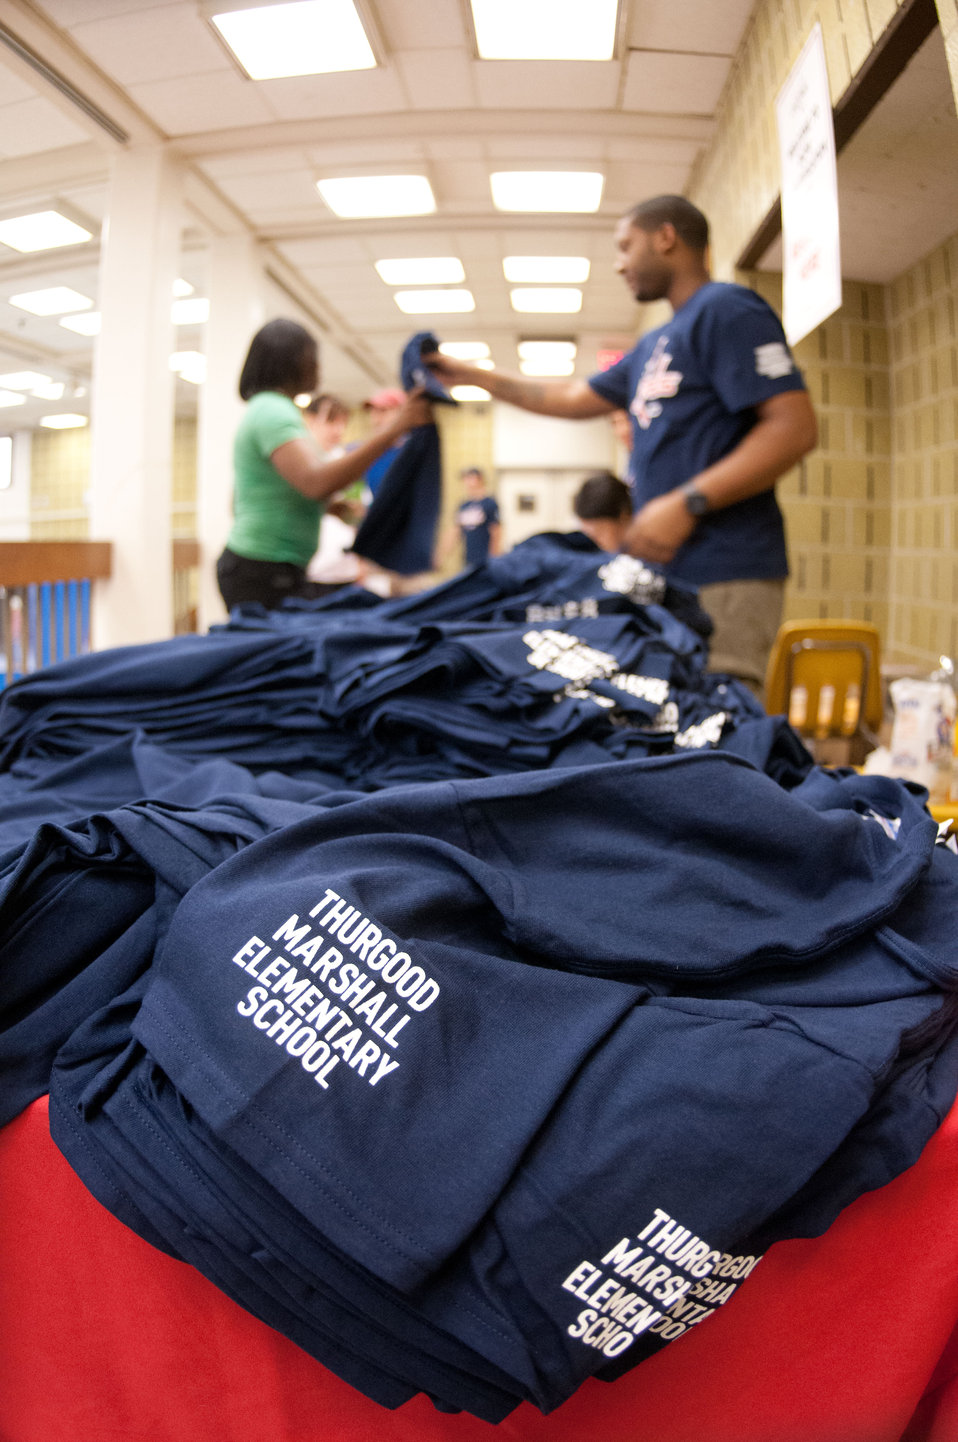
Check-in table where U.S. Department of Agriculture (USDA) People’s Garden Executive Master Gardeners, friends, and family, along with Washington Capitals fans start the day volunteering in District of Columbia Public Schools’ (DCPS) Beautification Day, on Saturday, August 25, 2012, at Thurgood Marshall Elementary School, in Washington, D.C. Each year people are invited to help “spruce up” public school facilities in preparation for the first day of school. More than 70 volunteers pitched in at this large school facility. The People’s Garden effort involves building and painting raised planter boxes, then preparing the soil mixture so they are “ready to grow.” Additionally, a team that includes descendants of U.S. Supreme Court Justice Thurgood Marshall assembles a prefabricated garden toolshed. The Justice’s son, John Marshall leads the team, which includes Brianna the Justice’s great-grand daughter in one of many multi-generational efforts at this school today. Washington Capitals Forward Mike Riberio, his family and mascot Slapshot participated in every project underway at Marshall School. From the outside gardens, to inside murals, and robotics worktable construction, the teams made their goals.